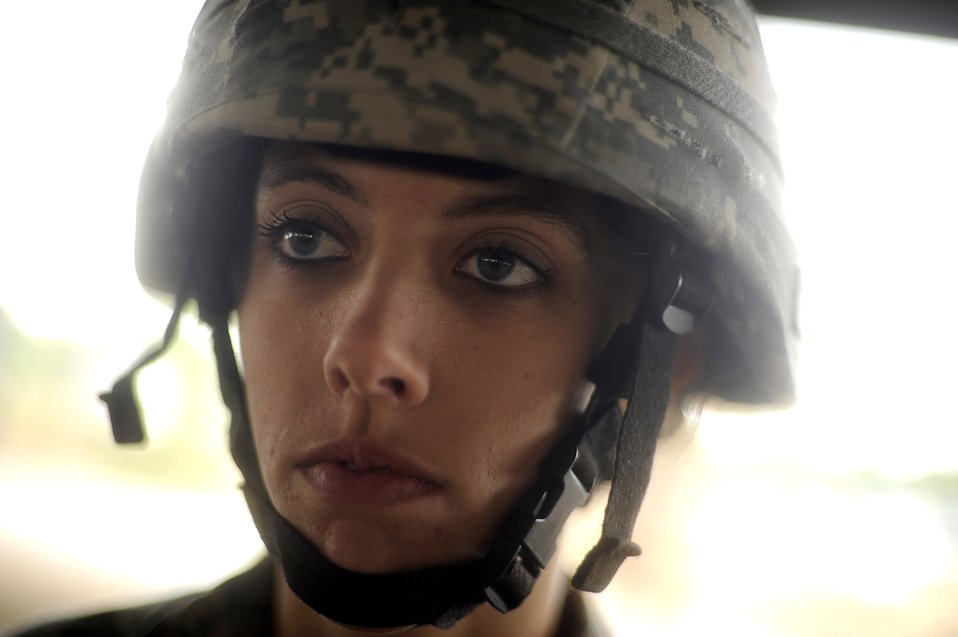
Operation Toy Drop

Army Spc. Ashley Beck from the 82nd Airborne Division from Fort Bragg, N.C., attends parachute landing fall class Dec. 5 before the Operation Toy Drop jump at Pope Air Force Base, N.C. Operation Toy Drop is an annual Airborne jump at Fort Bragg in its 11th year hosted by the Army Civil Affairs and Psychological Operations Command (Airborne), and supported by Fort Bragg's XVIII Airborne Corps and the Air Force Reserve Command's 440th Airlift Wing at Pope AFB that gives Soldiers and Airmen the opportunity to help local families in need over the holidays while boosting morale and incorporating valuable training. More than 3,000 Soldiers donated a toy for a lottery ticket and the chance to jump under a foreign jumpmaster, earning them their foreign jump wings. This year, German and Irish jumpmasters will be issuing the commands from C-130 Hercules aircraft during the operation.